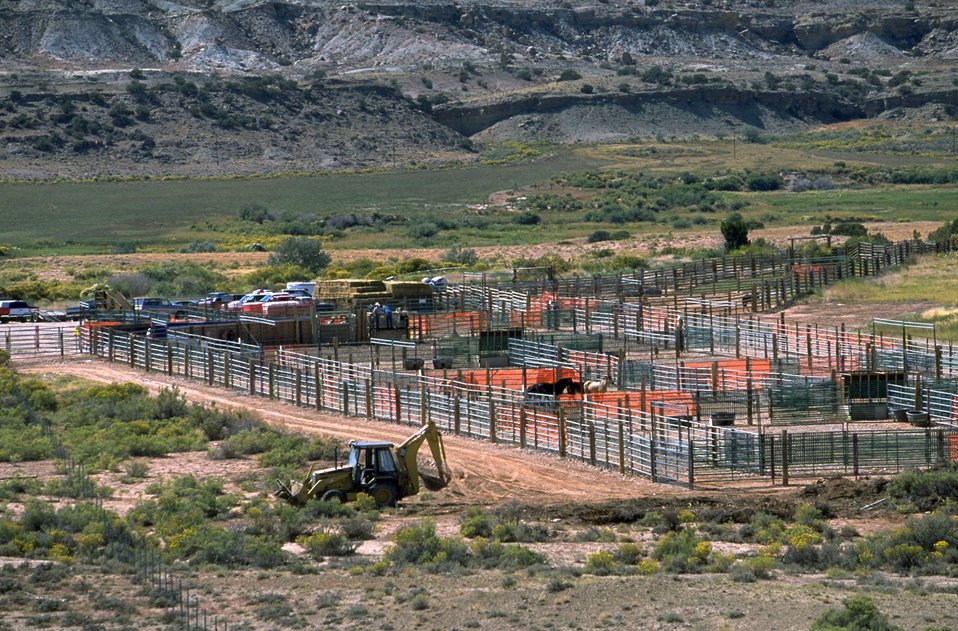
Britton Spring wild horse holding corrals in the Pryor Mountain National Wild Horse Range